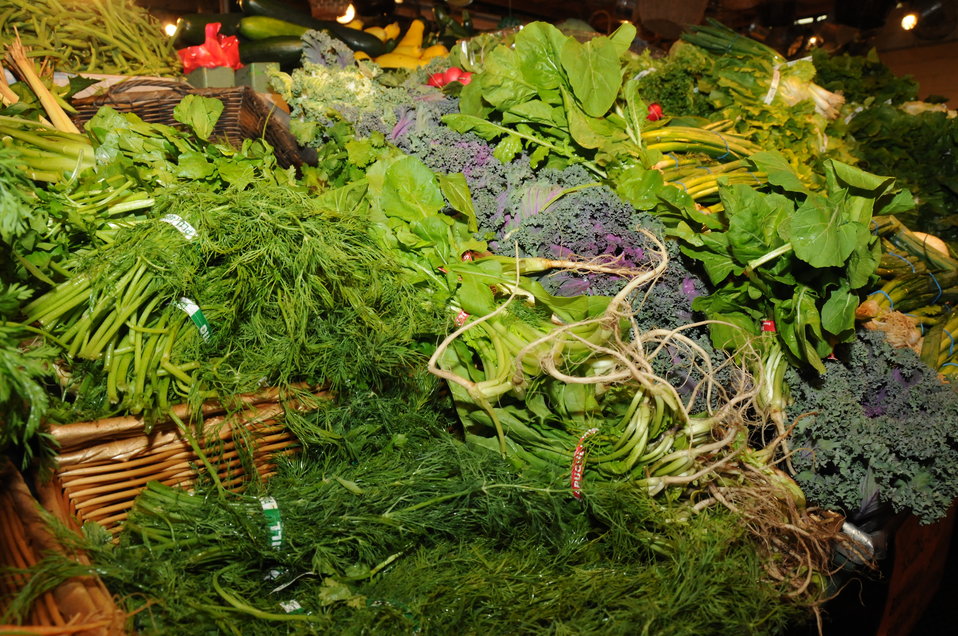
The Reading Terminal Market offers produce fresh from the field to the people of Philadelphia, PA on April 3, 2009. There are Amish specialties, fruits, vegetables, meats, seafood, and poultry. Reading Terminal Market opened for business in 1892 with approximately 78,000 square feet and almost 800 spaces for vendors. The Market was revitalized in the 1990’s and today is still the gastronomic bazaar that its original planners had envisioned. Many of the historic Market stands survived the reconstruction and are once again filled with local produce, fresh eggs, milk, meats, poultry, seafood, handmade crafts, jewelry, and clothing. The Market is home to more than 80 merchants, two of whom are descendants of the original stand holders from a century before.